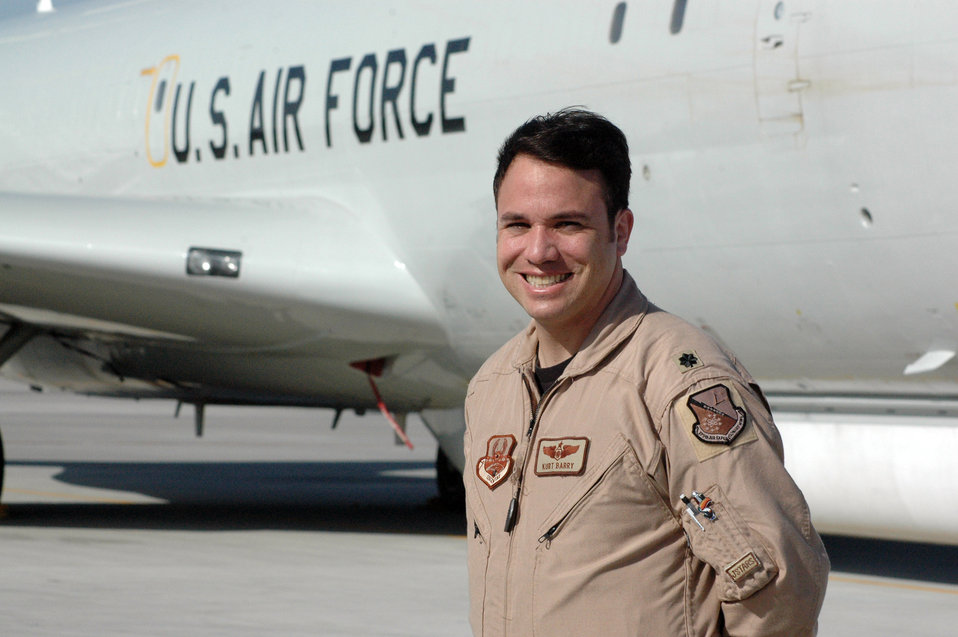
Airman Beats Cancer

Lt. Col. Kurt Barry, 128th Expeditionary Air Command and Control Squadron air battle manager, beat cancer and fought to return to flying status.